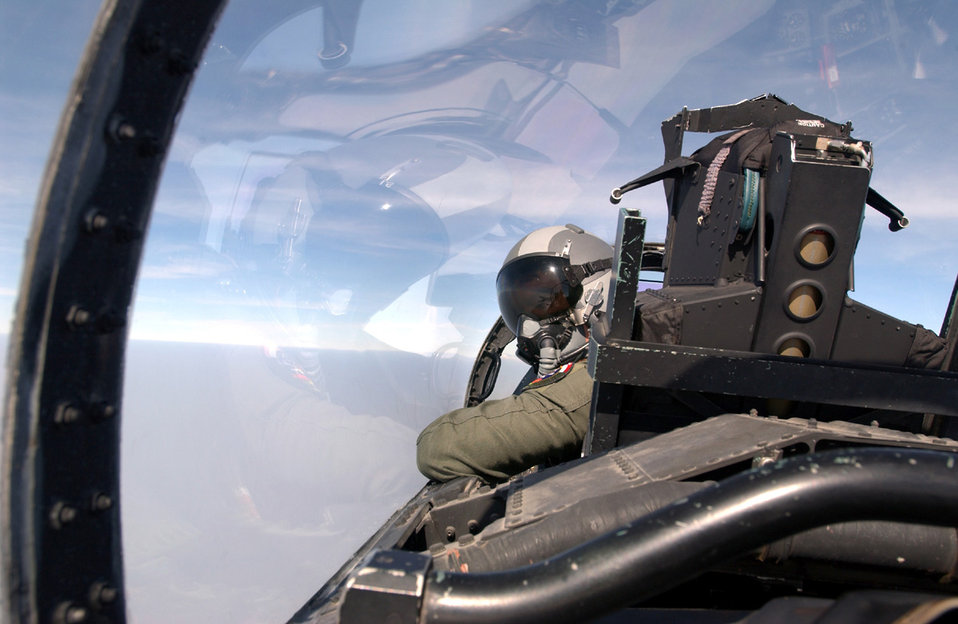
Cope Tiger '04

KORAT ROYAL AIR FORCE BASE, Thailand -- Maj. Paul Hibbard